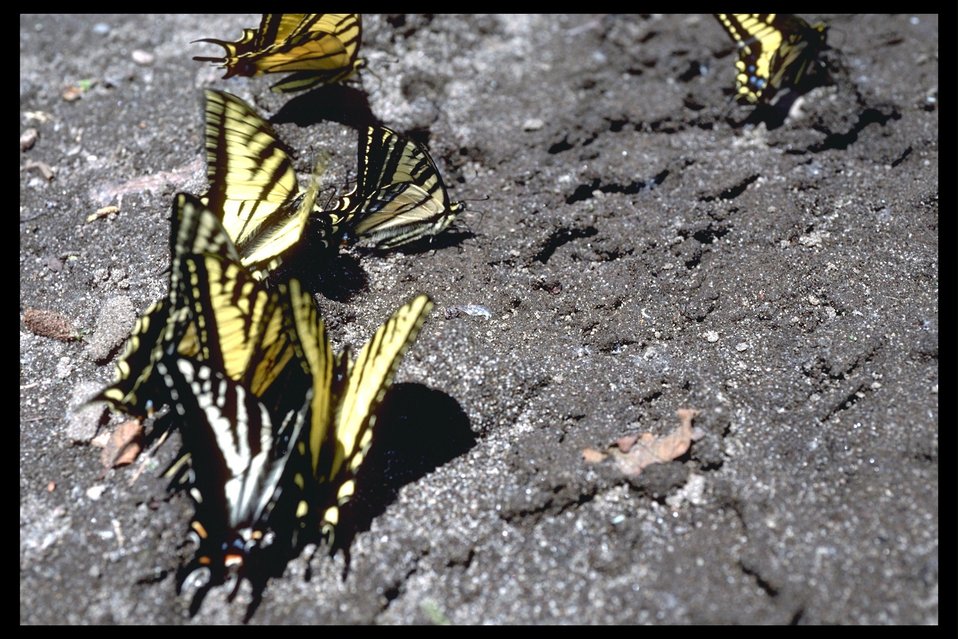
Tiger Swallotail Butterflies at Riddle Brothers Ranch.